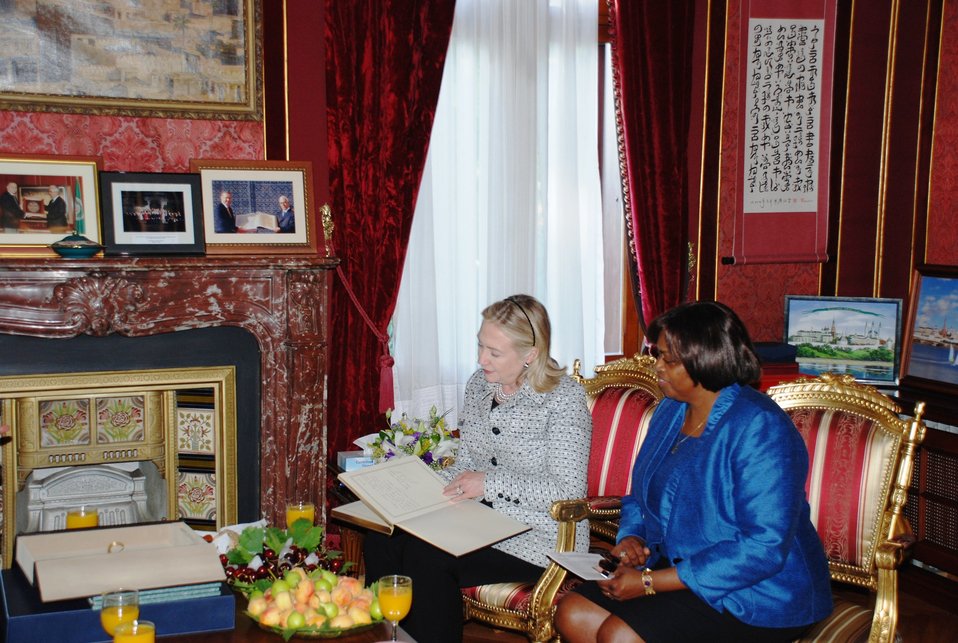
Secretary Clinton Meets With Ambassador Cook

U.S. Secretary of State Hillary Rodham Clinton meets with Ambassador-At-Large for International Religious Freedom Suzan Johnson Cook in Istanbul, Turkey, on July 15, 2011.